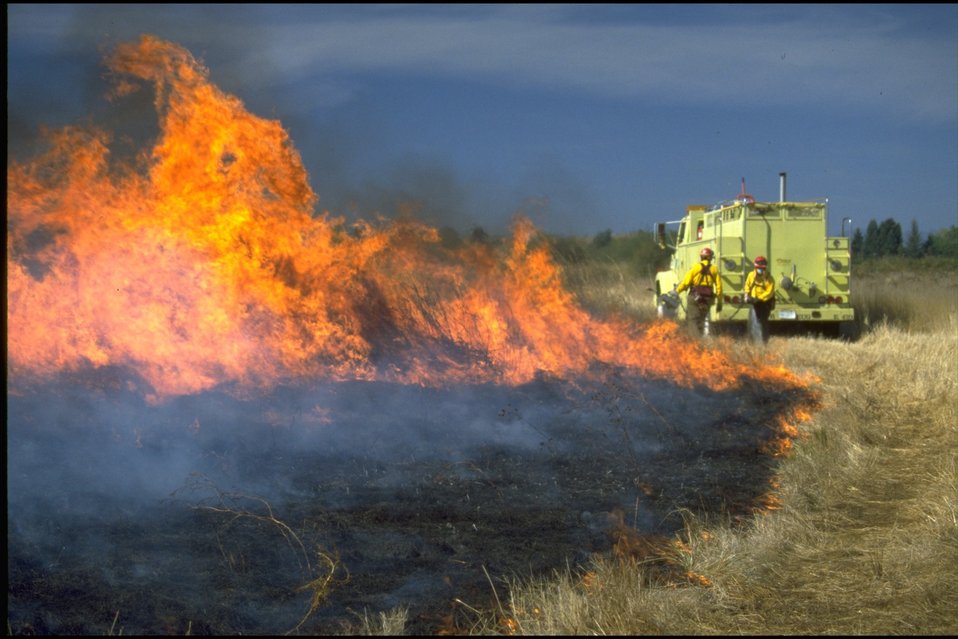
Turtle-Swale Wetland Burn.